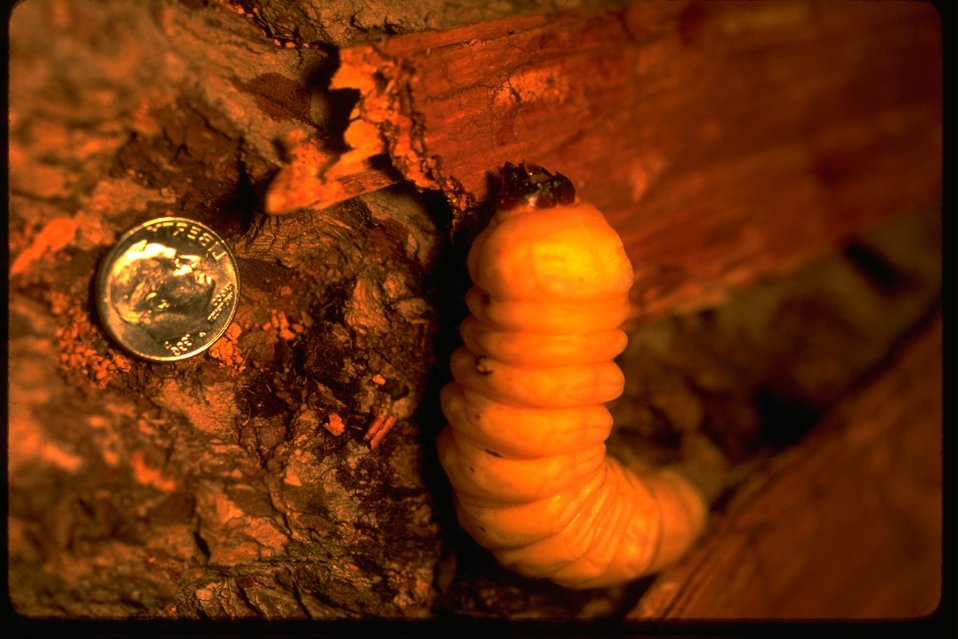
Bark Beetle larva and a dime.